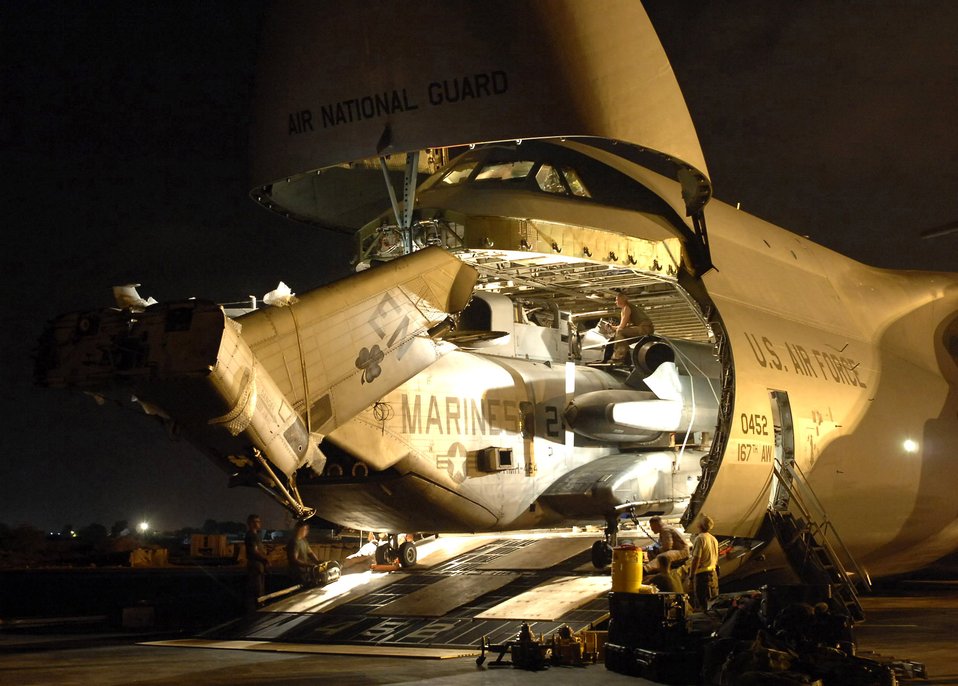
A tight squeeze

Crewmembers remove a Marine CH-53E Super Stallion helicopter from a C-5 Galaxy in Djibouti, Africa. The massive C-5s are capable of transporting oversized cargo to any theater of combat on the globe.